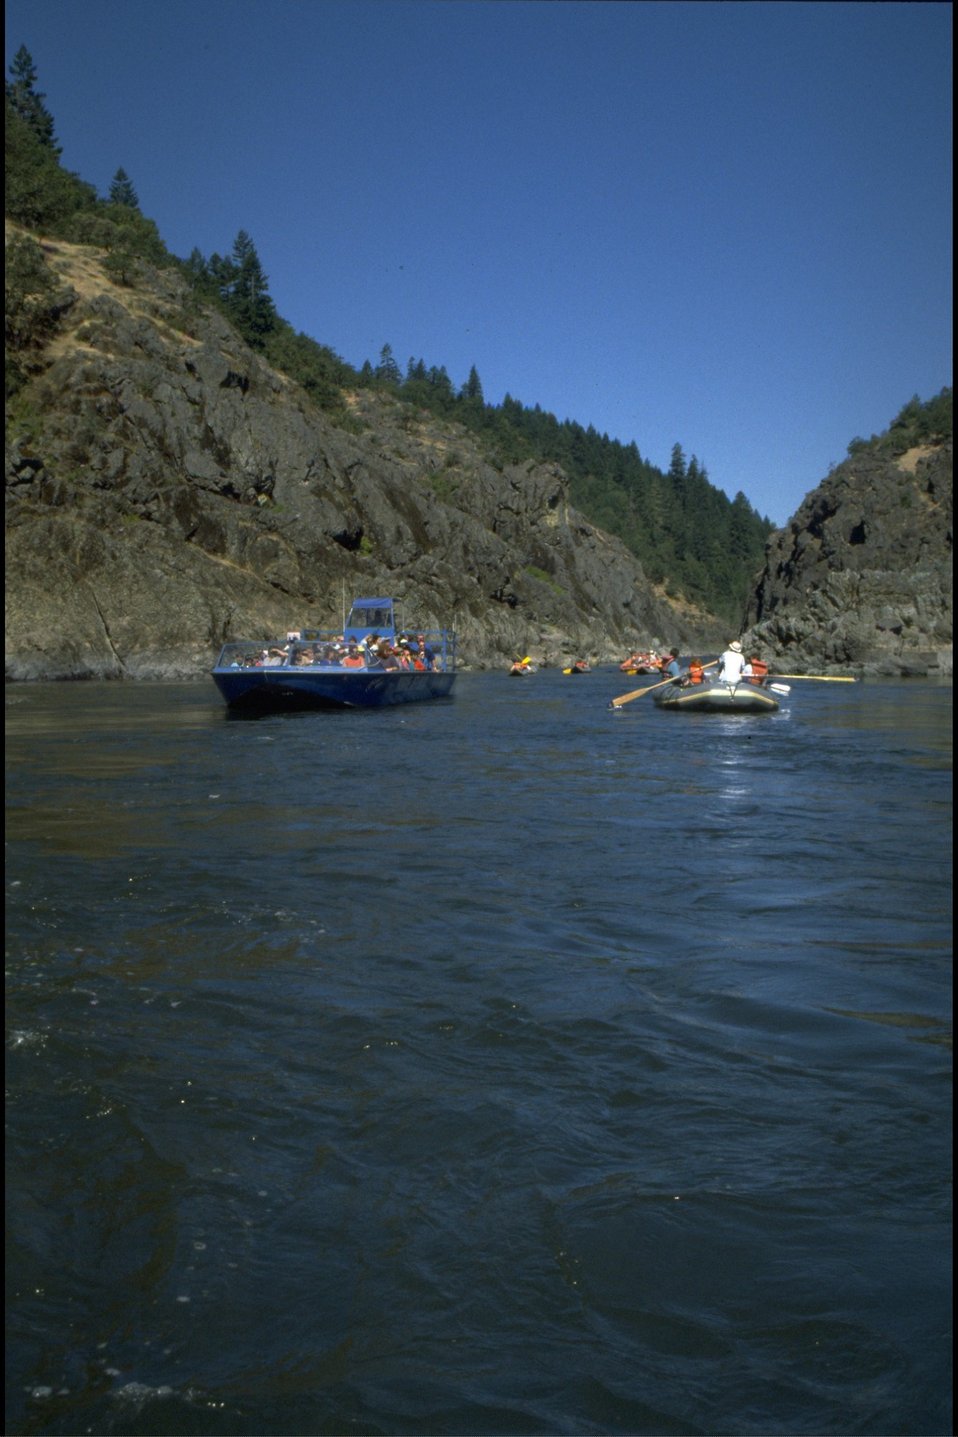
Rogue River; Hellgate Canyon. Hellgate Recreation Area - mix of boats: motorized tour boats, rafts, and inflatable rafts.